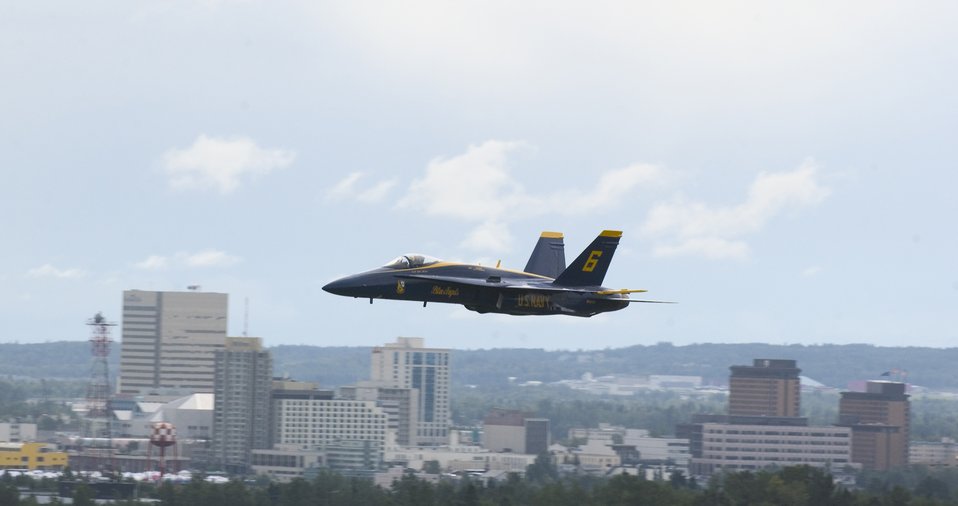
Arctic Thunder

An F-18 Super Hornet from the Navy's Blue Angels speeds past the Anchorage skyline during the Arctic Thunder air show and open house at Elmendorf Air Force Base, Alaska, on Aug. 12. Nearly 136,000 people attended the two-day event, which was headlined by the Blue Angels and the Army's Golden Knights.